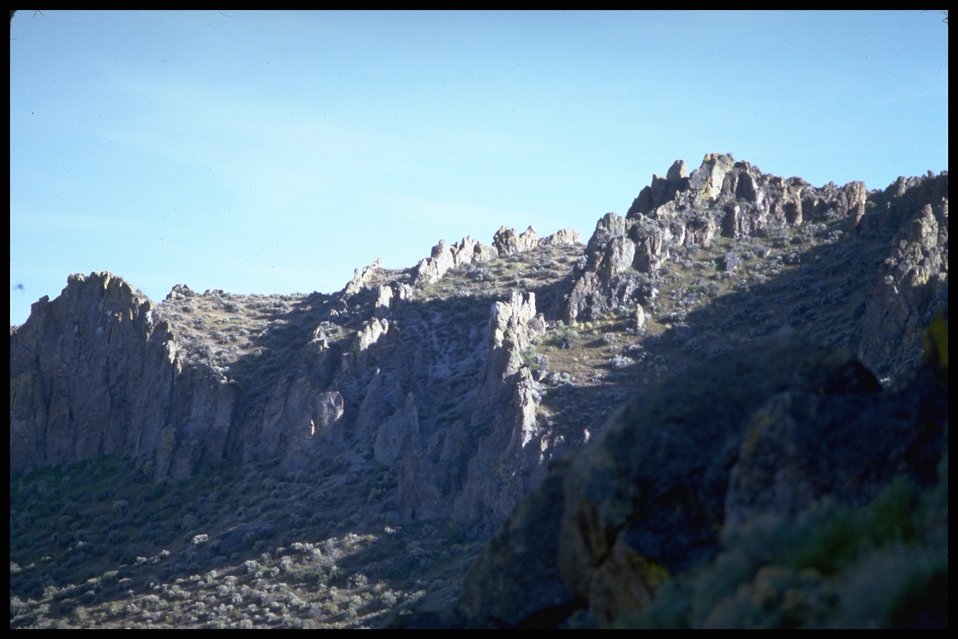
Golden Eagle Area, Lakeview District.